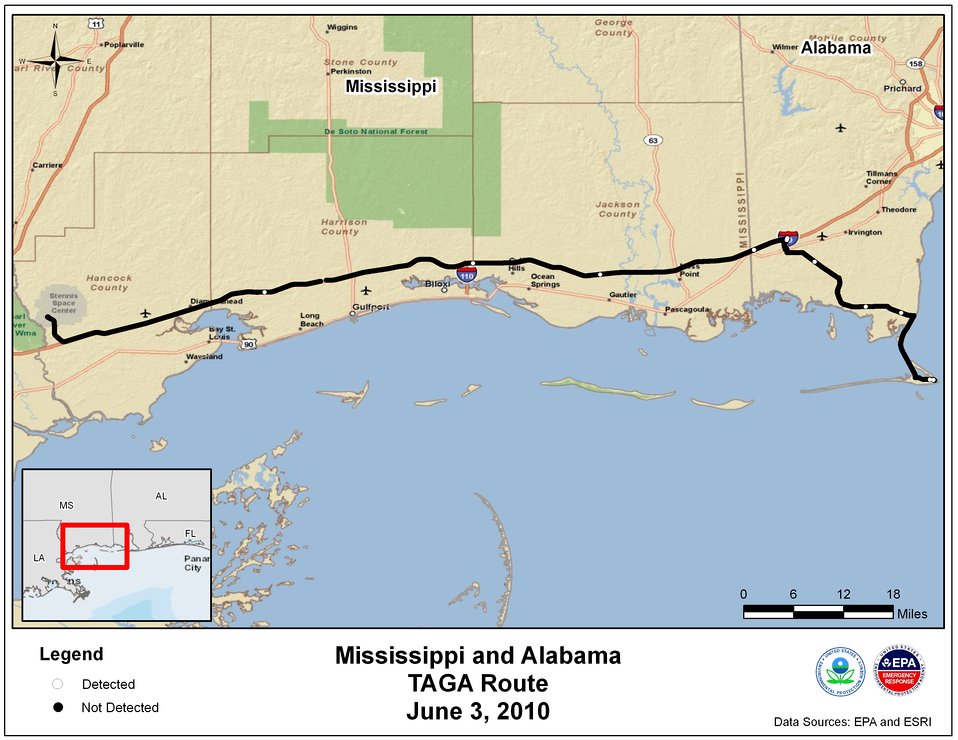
EPA TAGA Air Monitoring Locations June 3, 2010